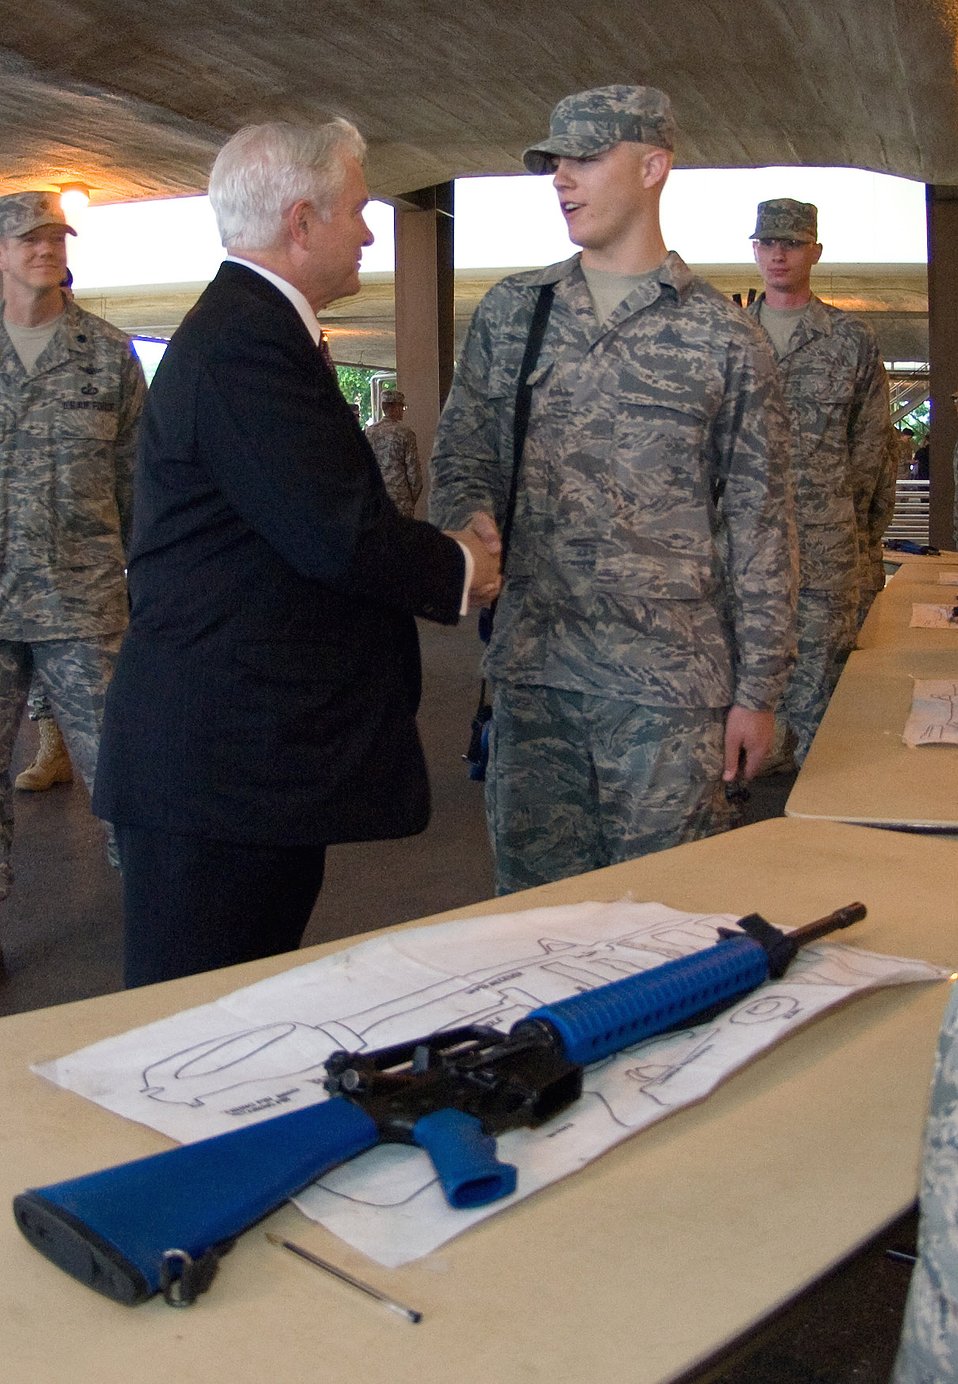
SECDEF visits Airmen, tour BMT facilities

Secretary of Defense Robert M. Gates meets with basic trainees after watching them disassemble and reassemble M16 rifles during a visit to Lackland Air Force Base, Texas, July 24.